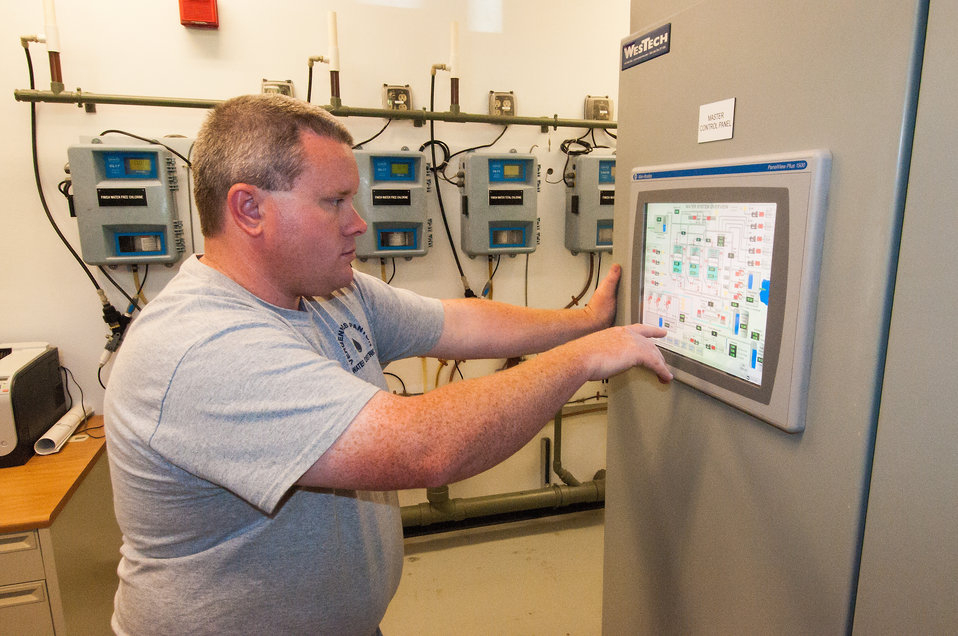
Chris McKirryher monitors pumps, filters and water storage at the Vergennes-Panton Water District in Vergennes, VT. Vergennes was able to upgrade the city’s water treatment plant with a Water and Environmental Programs (WEP) loan from the U.S. Department of Agriculture (USDA) Rural Development (RD) on Sep. 18, 2013.